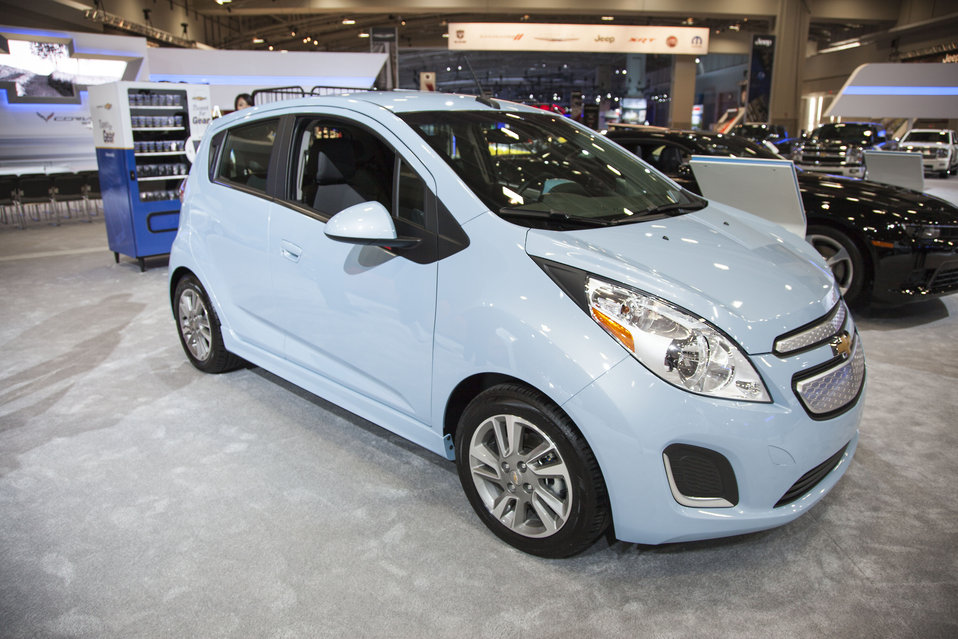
The Spark EV is the first all-electric vehicle that General Motors has produced since the EV1 in the late 1990s. Available to drivers in California and Oregon, the car uses an electric motor that is produced at a factory in White Marsh, Maryland. Through the Recovery Act, the Energy Department supported this plant, making it the first time a domestic automaker is building electric motors in the U.S.